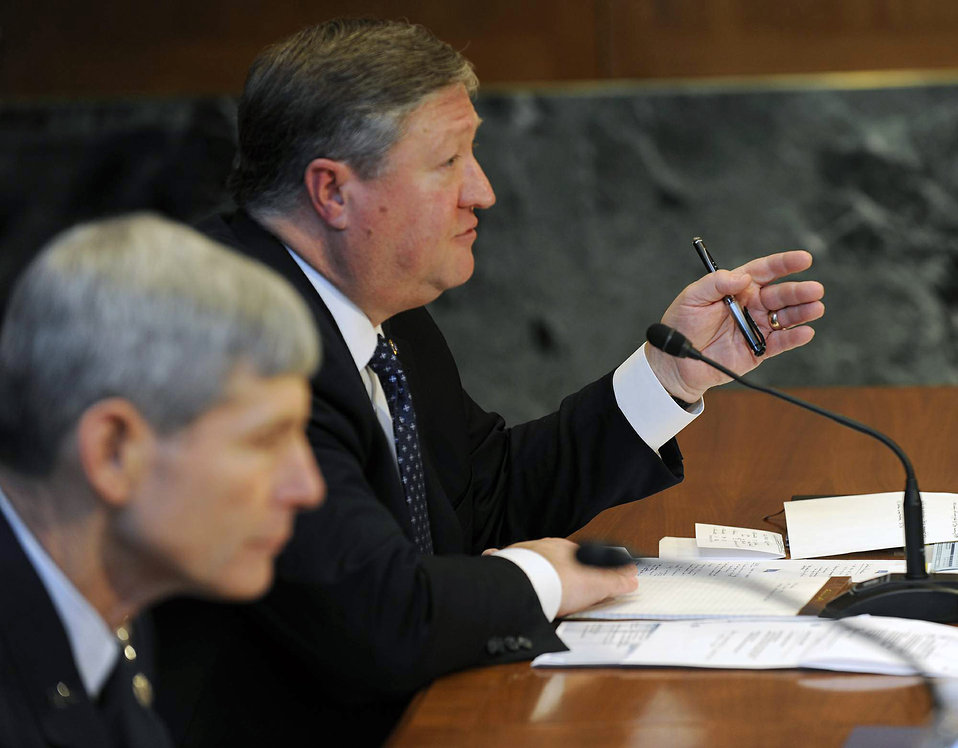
Air Force officials present budget to appropriations committees

Secretary of the Air Force Michael Donley (right) testifies with Air Force Chief of Staff Gen. Norton Schwartz March 30, 2011,during the Senate Appropriations Committee’s Subcommittee on Defense hearing on the Air Force’s fiscal 2012 budget request in Washington, D.C.